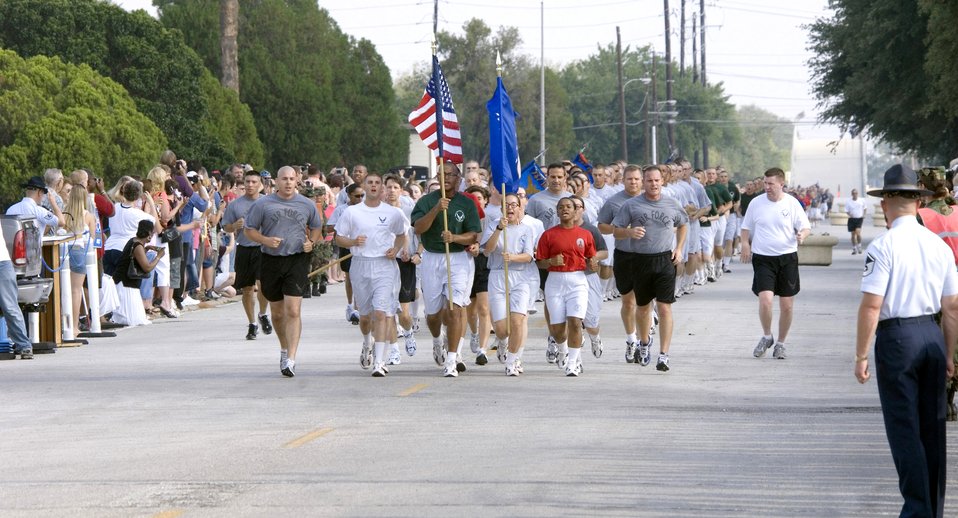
Airmen's Run

Airmen completing Air Force Basic Military Training at Lackland Air Force Base, Texas, pass family and friends during the 2.5-mile Airmen's run Thursday, June 29. The run is a victory celebration of the challenges overcome and esprit de corps gained by Airmen during training.